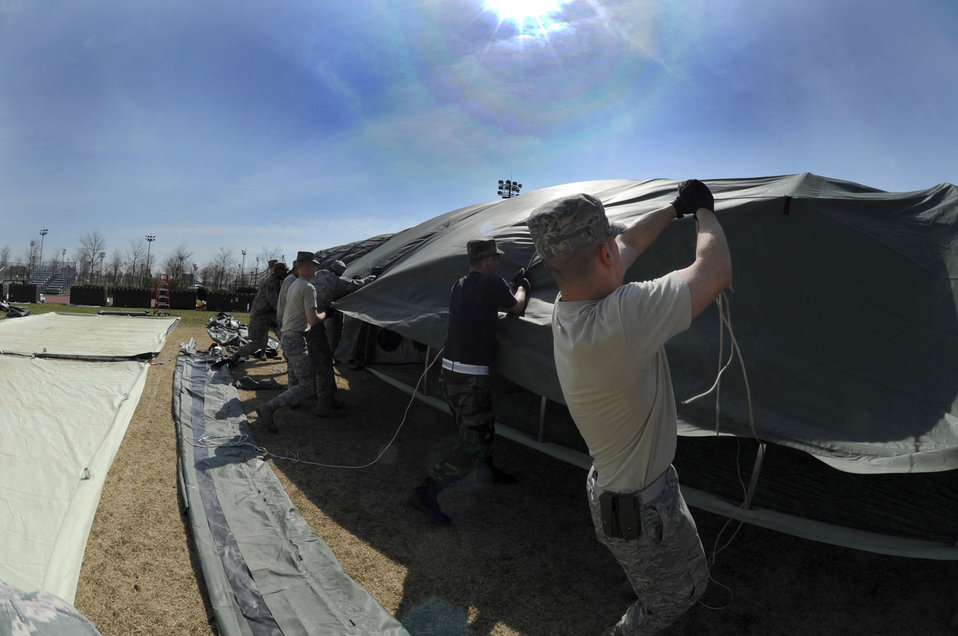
Setting up a tent city

Airmen from multiple U.S. Air Forces in Europe civil engineer squadrons assemble tents March 22, 2011, at Aviano Air Base, Italy, to house contingency personnel arriving there in support of Operation Odyssey Dawn.